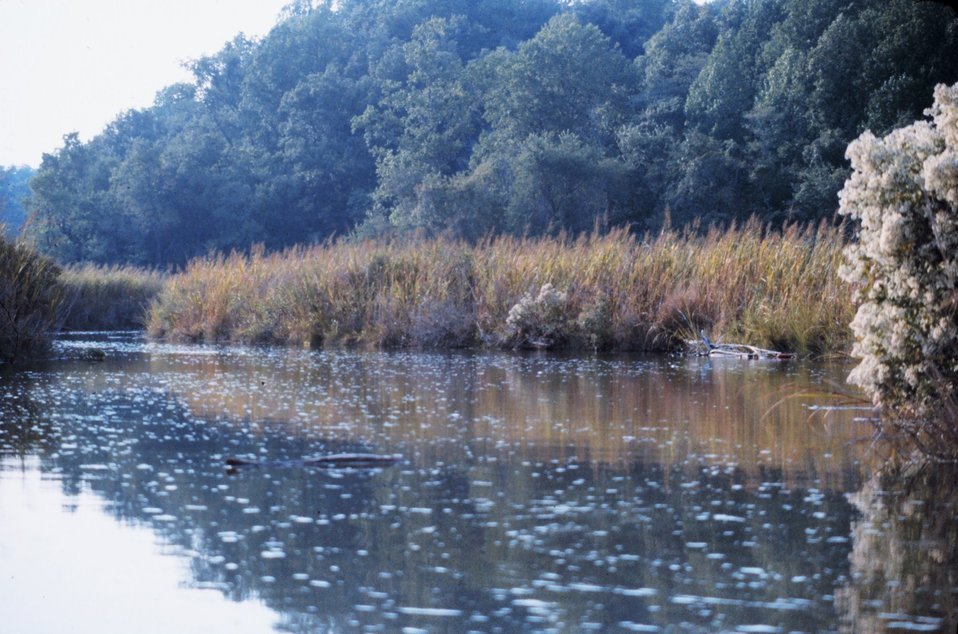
Tidal inlet along the western shore of the Cheasapeake Bay.